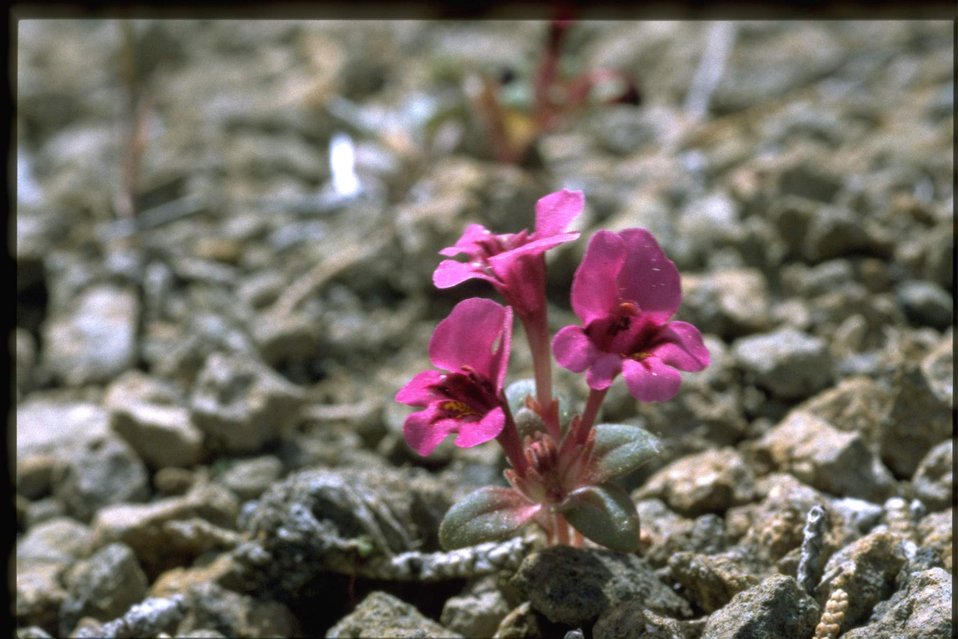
Medium shot of Cusick's monkey flower.